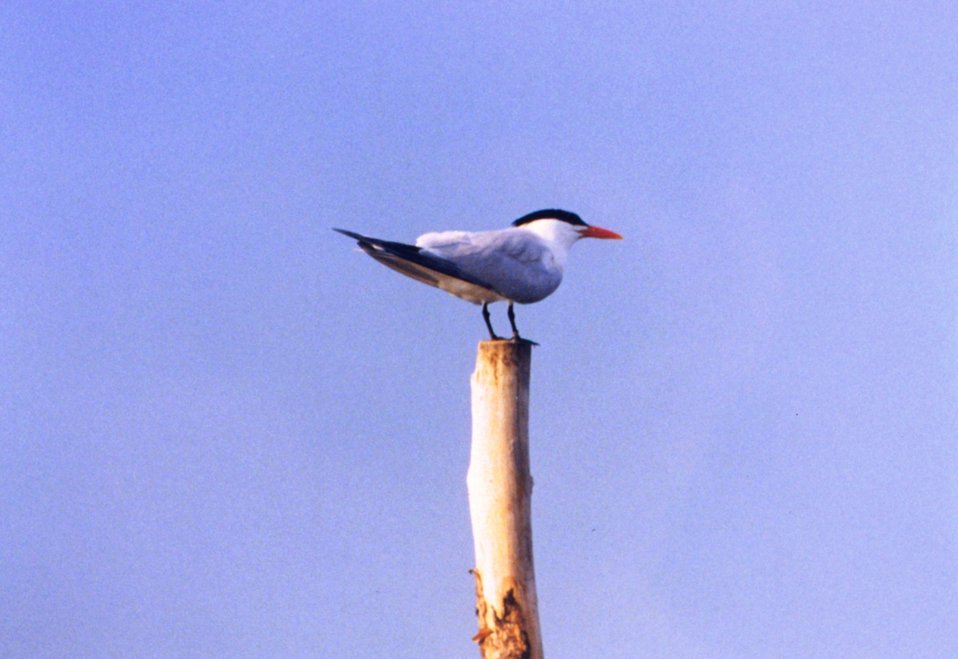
A Caspian Tern perched on a pole.